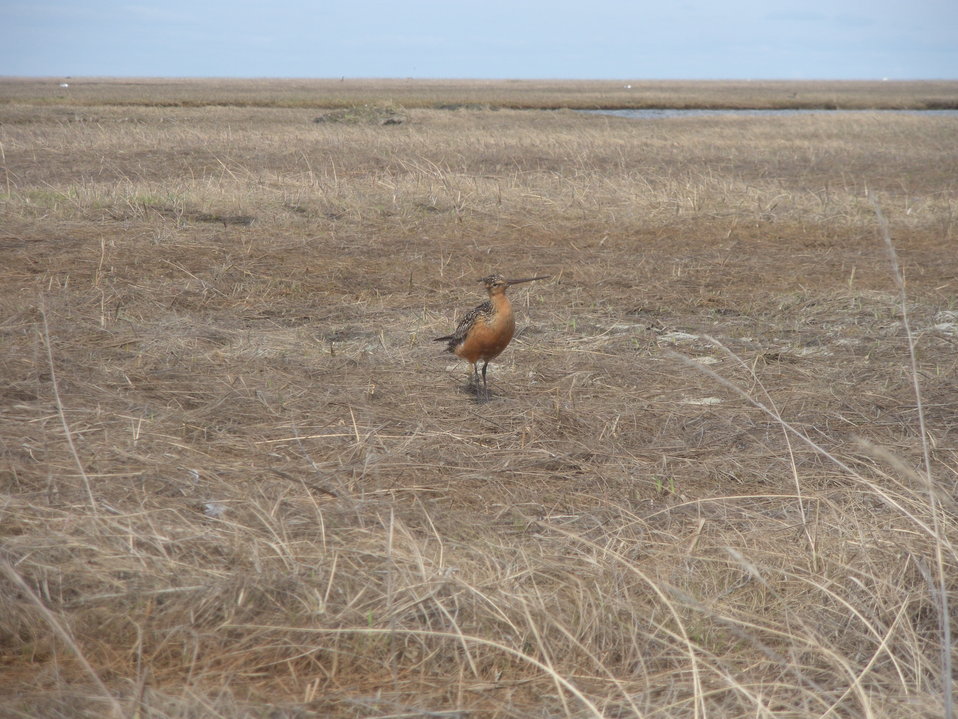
Male godwit vocalizing

Yukon Delta NWR